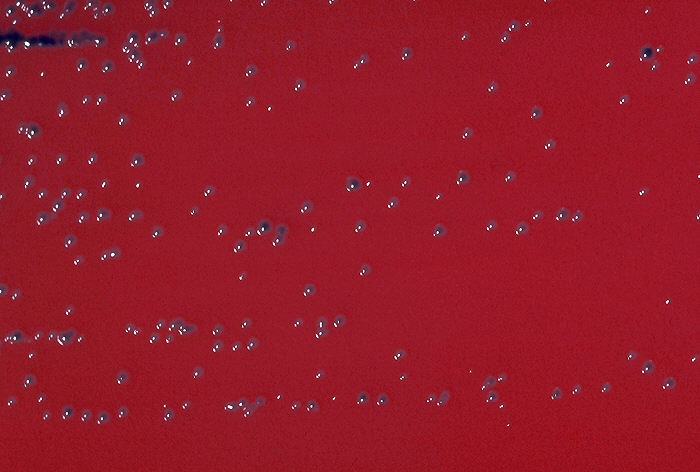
Blood agar plate culture of Corynebacterium diphtheriae (belfanti).